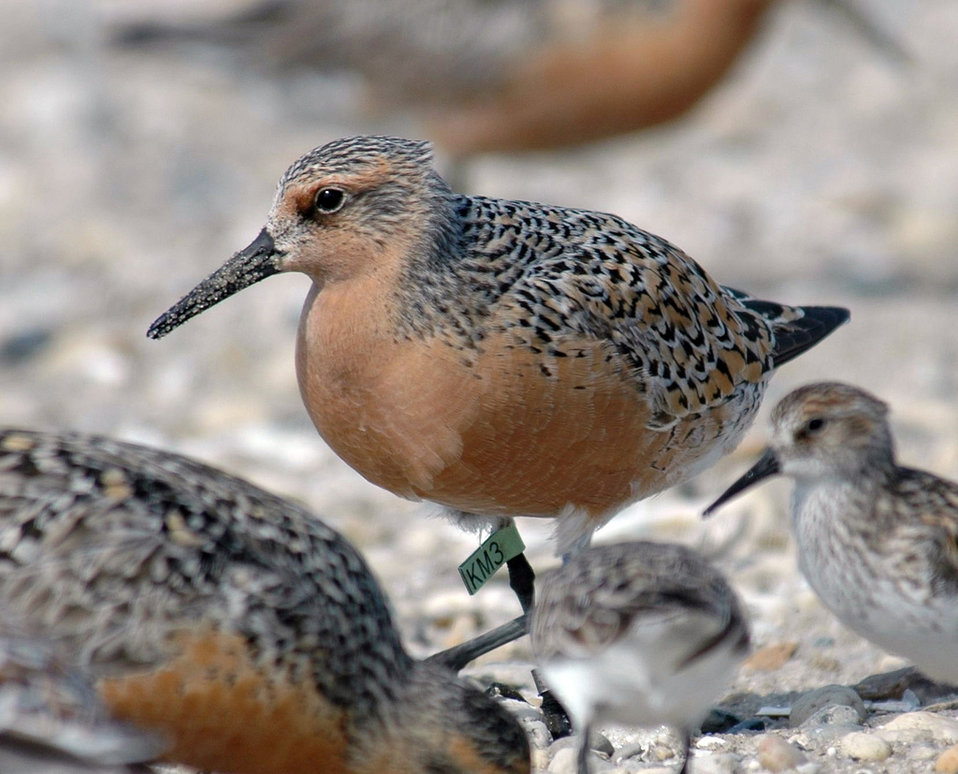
Red knot

Bombay Hook National Wildlife Refuge/ USFWS